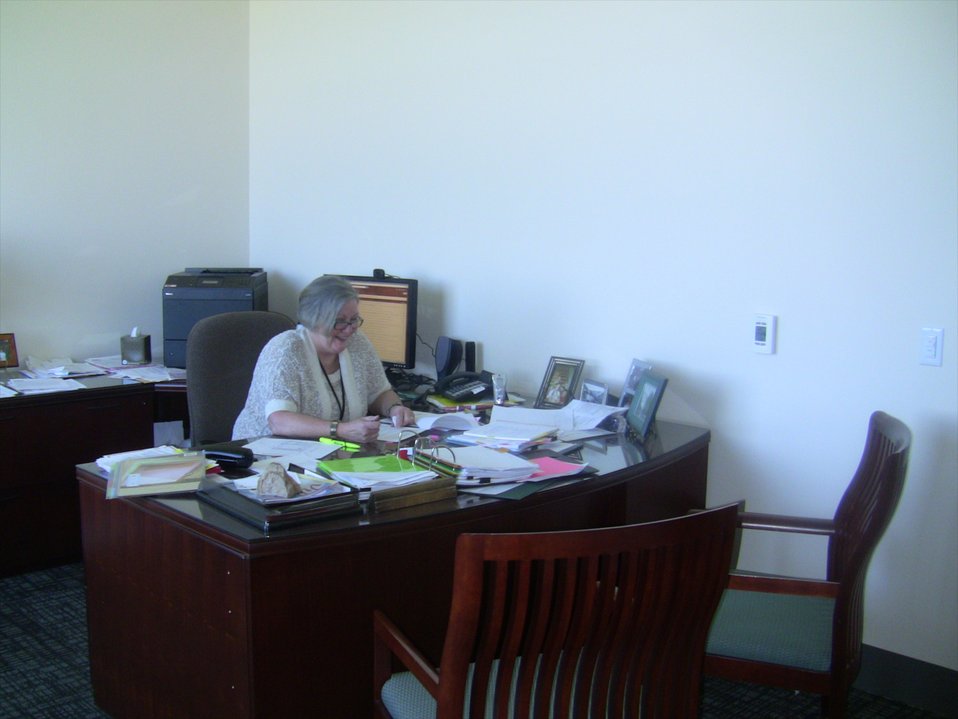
Barbara Voss hard at work; Location: National Archives at Denver, Broomfield, CO